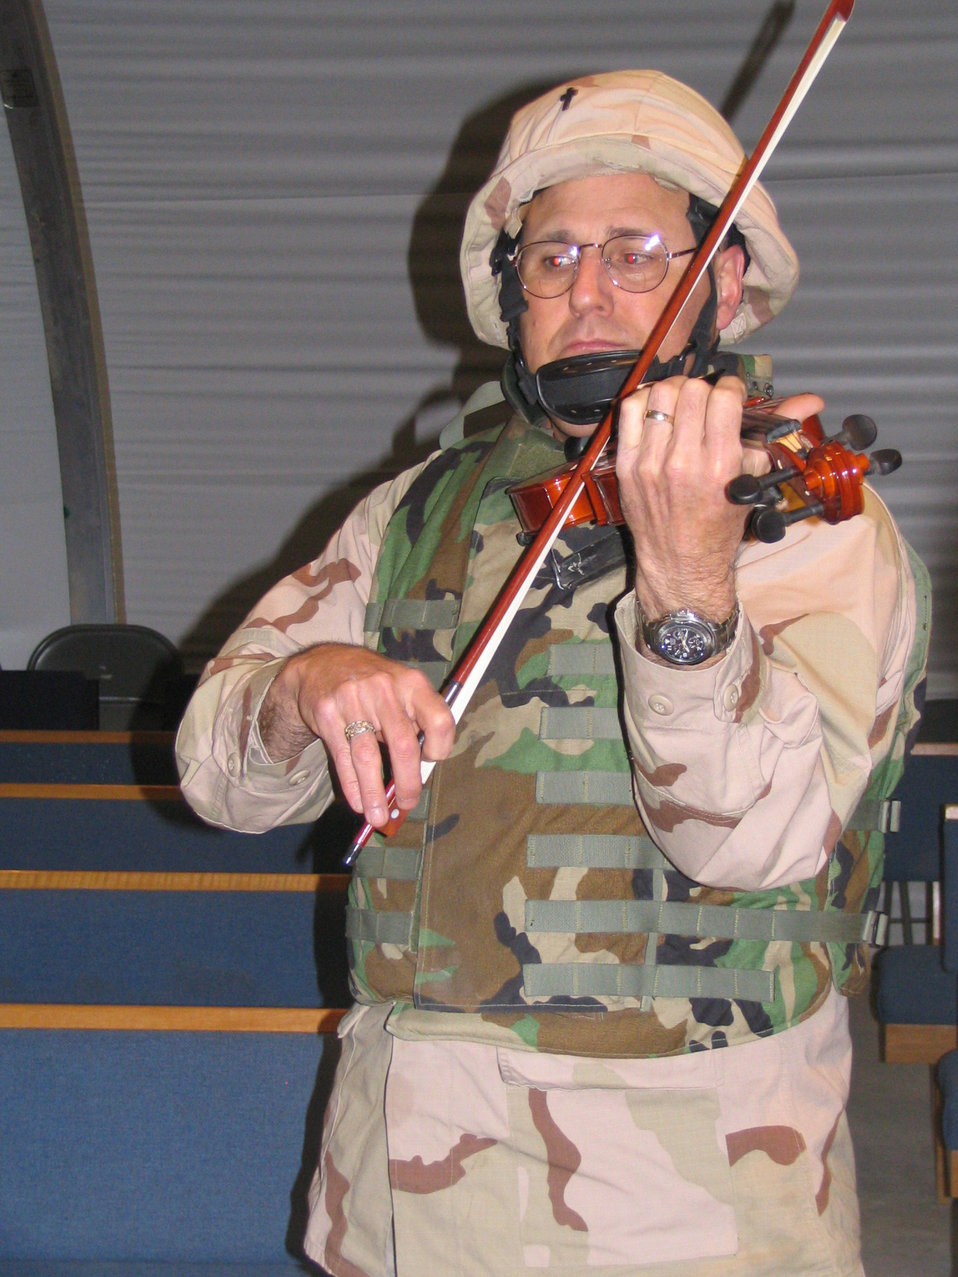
Combat praise

KIRKUK AIR BASE, Iraq -- Chaplain (Lt. Col.) Victor Toney resumes playing his violin during a security alert here. People in Kirkuk's Warrior Worship Team use their musical talents to help people here worship. Airmen and Soldiers of all ranks and duties volunteer to be part of the praise team. Chaplain Toney is assigned to the 506th Air Expeditionary Group.